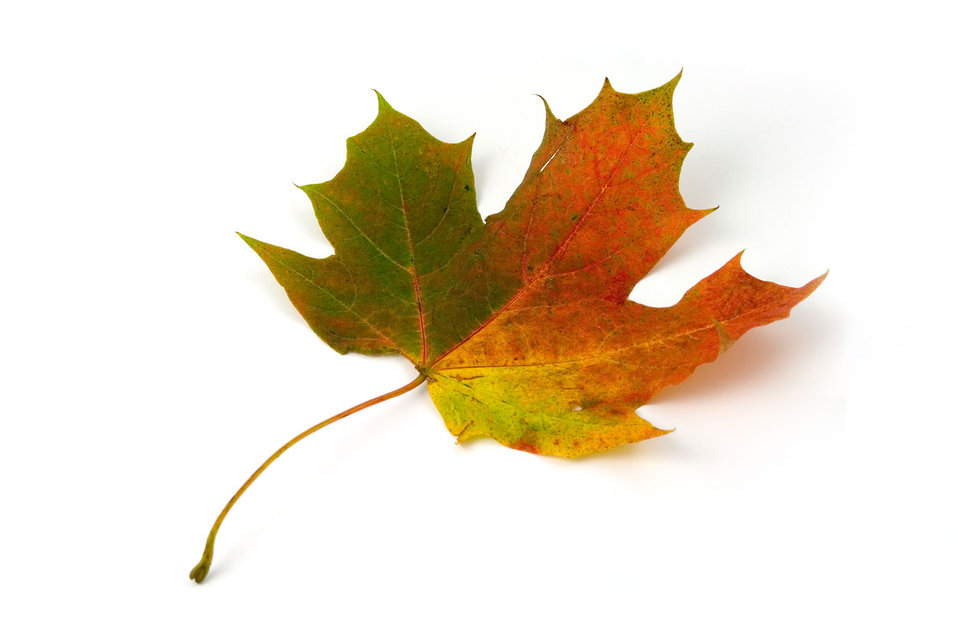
Maple leaf

A single coloured maple leaf on white background.